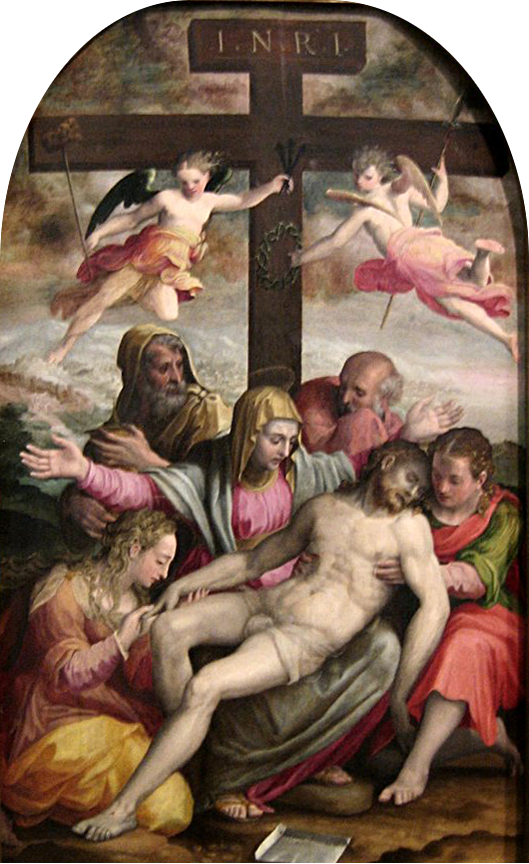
'The Deposition', oil on poplar panel by Prospero Fontana, 1563, Art Gallery of New South Wales